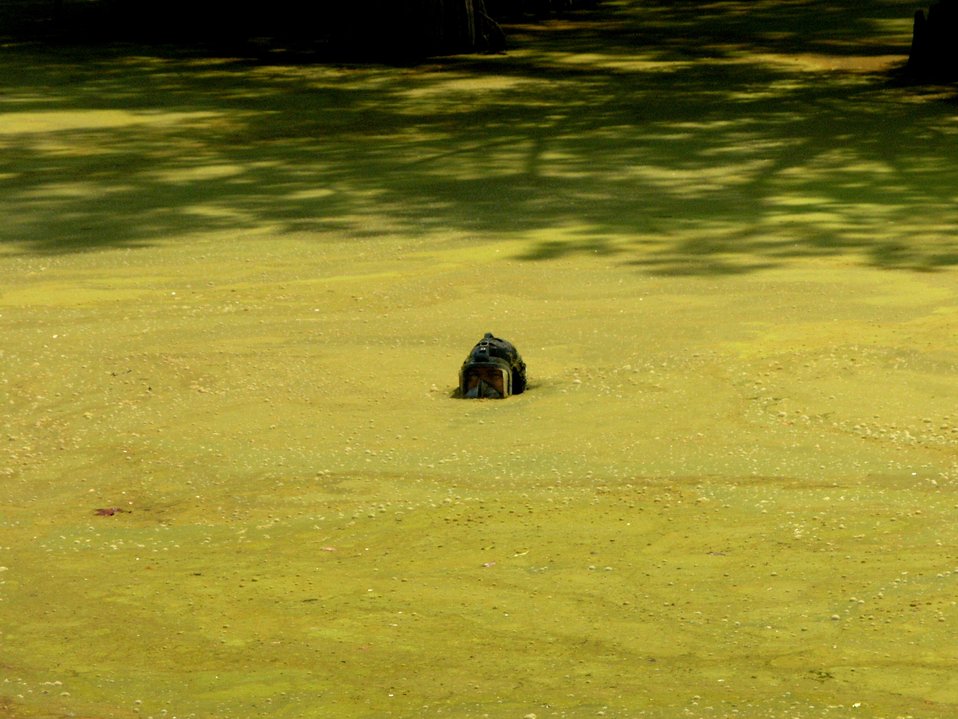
EPA diver samples Mississippi Delta near Philipp, MS

EPA diver Mel Parsons at the Tippo Bayou sampling station in the Mississippi Delta near Philipp, MS in August, 2011.

In what looks more like pea soup, this diver was helping to collect 'Sediment Oxygen Demand' information. Sediment oxygen demand refers to how much oxygen is being used by organisms and plants in the sediment. Oxygen within the sediment underwater normally accounts for 40-70% of the oxygen used within a body of water.

EPA uses these measurements to better understand the overall health of bodies of water. It provides precise environmental information for 'total maximum daily load' (TMDL) studies which help to inform water pollution regulations.

EPA information about impaired water quality and TMDLs